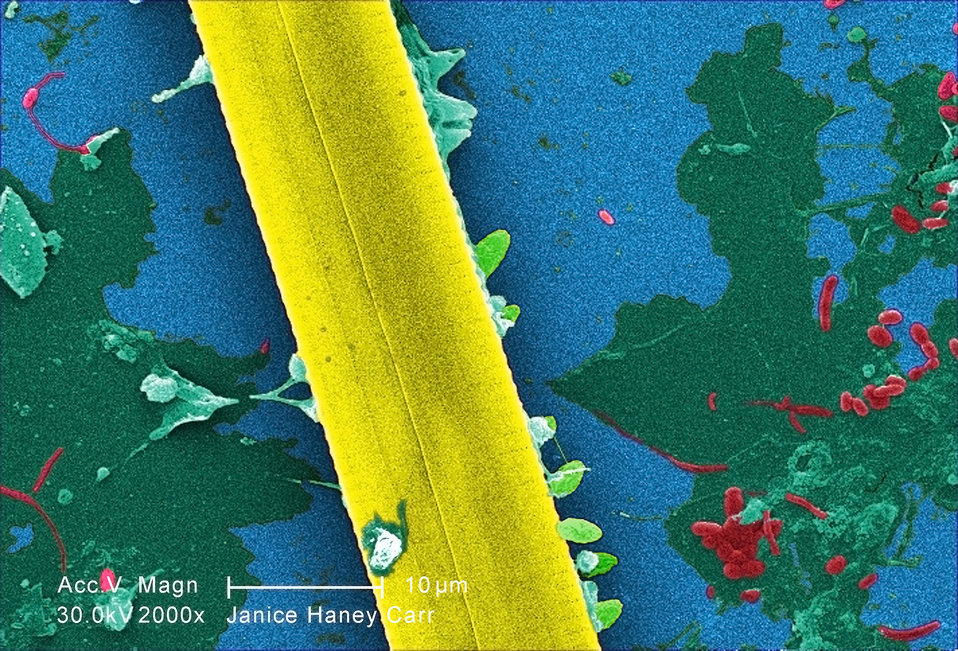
At a magnification of 2000X, this digitally-colorized scanning electron micrograph (SEM) of an untreated water specimen extracted from a wild stream mainly used to control flooding during inclement weather, revealed the presence of unidentified organisms, which included bacteria, protozoa, and algae. Though unidentified, this view depicts a section of a suspected green algae, Ankistrodesmus. Note the bacteria inhabiting the biofilm coating in the bachground.